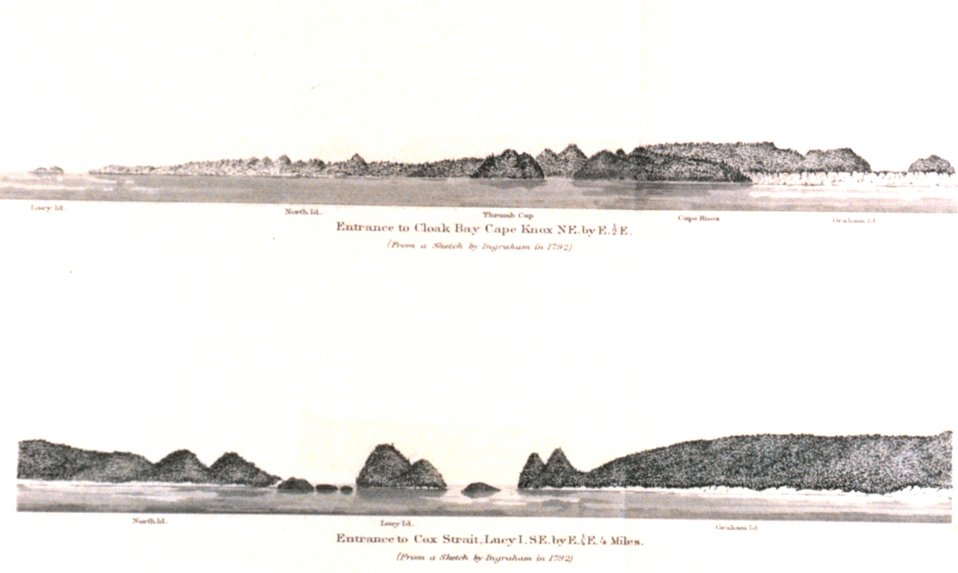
Entrance to Cloak Bay. Entrance to Cox Strait. In: Pacific Coast Pilot Alaska Part I 1883. P. 50. Library call number VK943 .N3 1883.